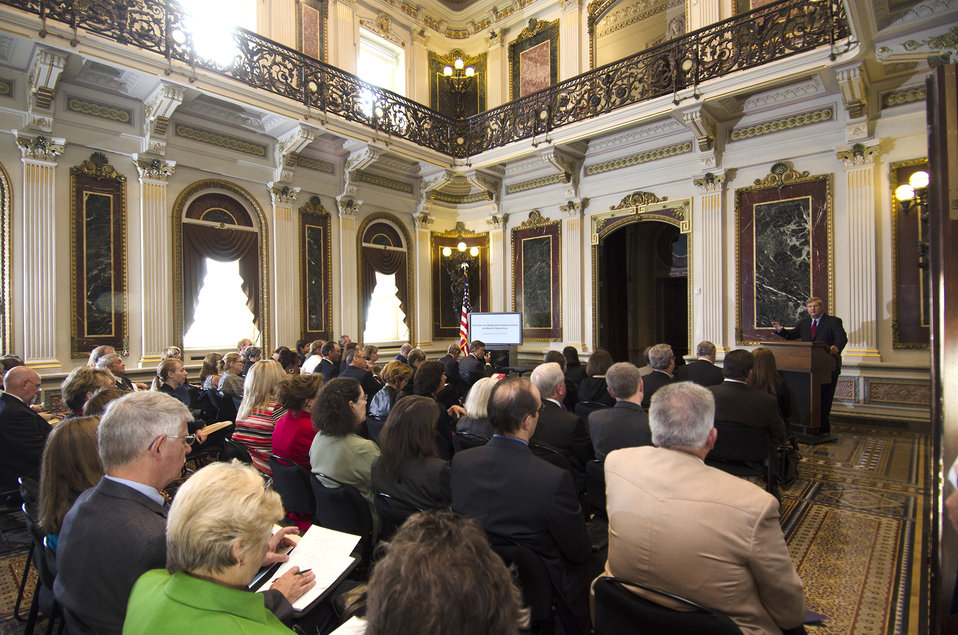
Agriculture Secretary Tom Vilsack addresses the 2nd Annual meeting of the White House Rural Forum concerning Regional Innovation at the Executive Office Building in Washington, D.C. on Wednesday, Sep. 18, 2013.